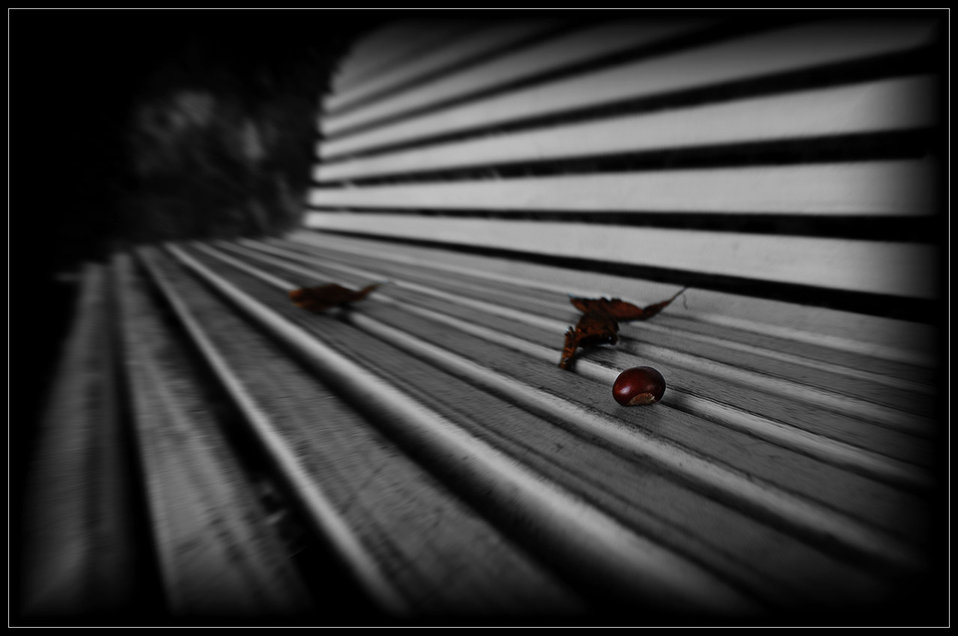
Chestnut on the bench.